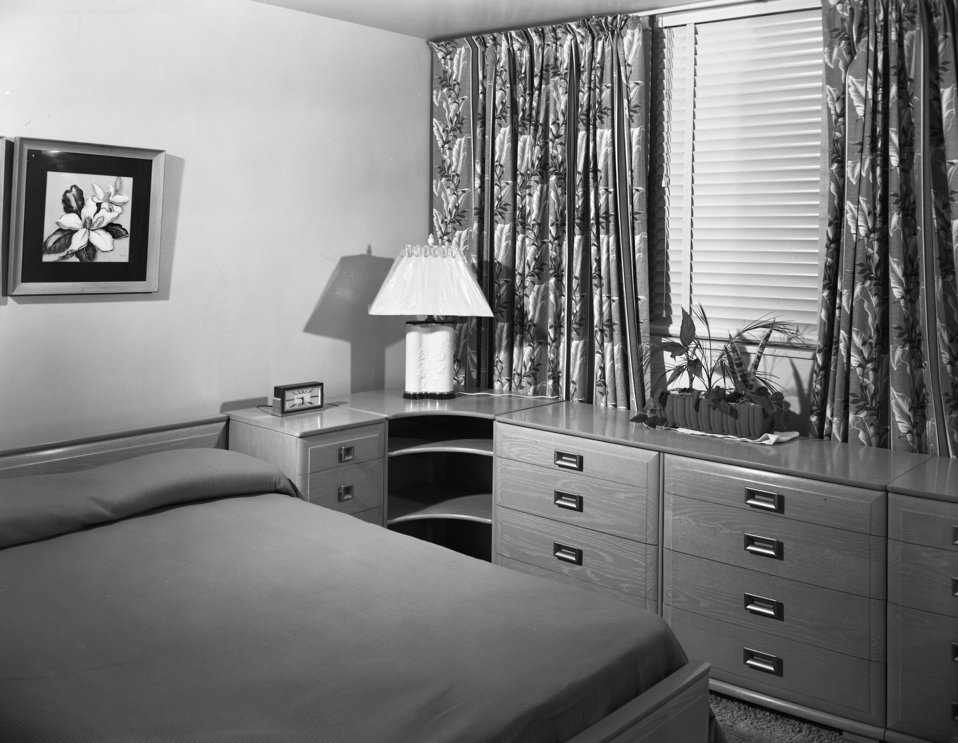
Garden Apartments Interior Oak Ridge 1949

5719-5b DOE photo Ed Westcott 9-20-1949 Oak Ridge Tennessee